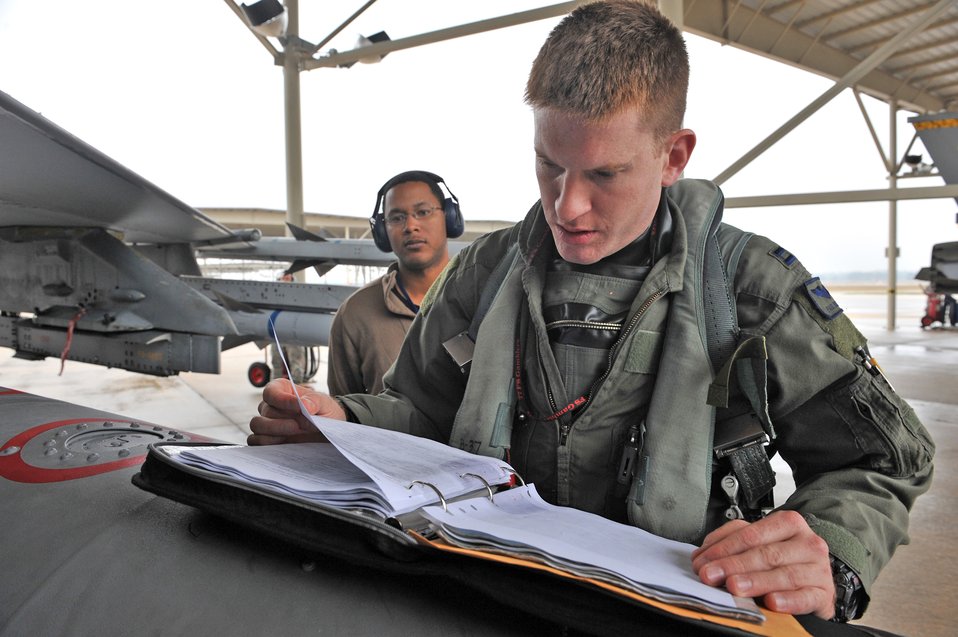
One more item...

Capt. Paul Doughty of the 77th Fighter Squadron reviews documents as part of his pre-flight check before take off during a phase 1 operational readiness exercise at Shaw Air Force Base, S.C. Airmen at Shaw routinely conduct phase 1 exercises to practice deploying forces.